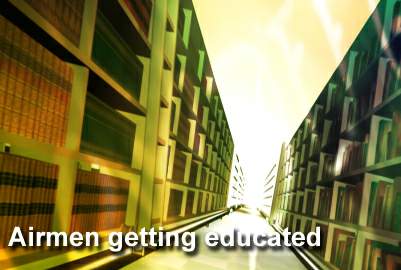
CCAF: A powerful weapon system in recruiting arsenal

The Community College of the Air Force staff helps Air Education and Training Command officials accomplish their educational mission by attracting young men and women before they enter Basic Military Training.